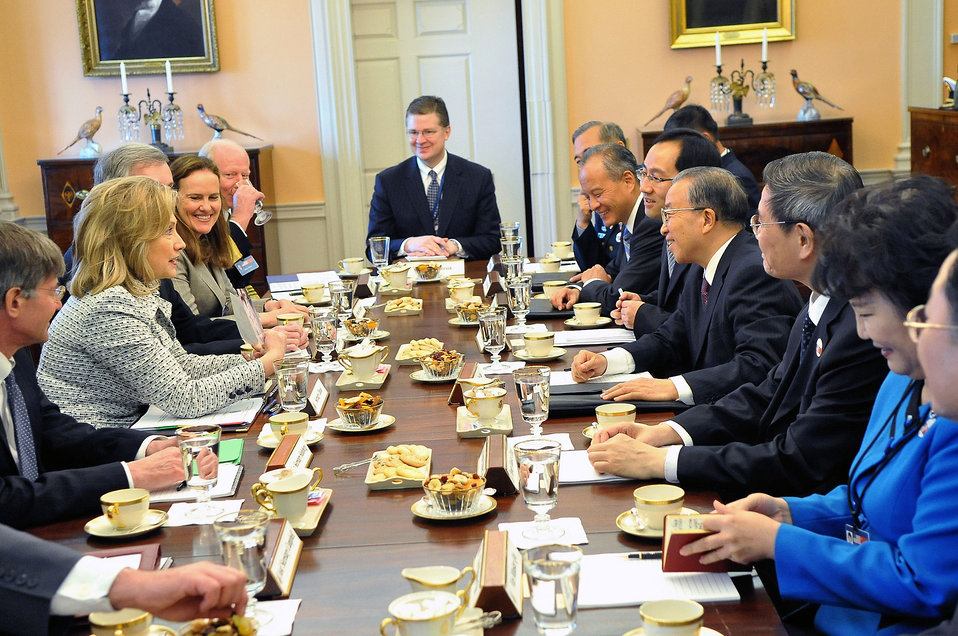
Secretary Clinton Hosts Working Luncheon With Chinese State Councilor Dai Bingguio

U.S. Secretary of State Hillary Rodham Clinton hosts a working luncheon with Chinese State Councilor Dai Bingguo and participants in the U.S.-China Strategic and Economic Dialogue (S&ED) Strategic Track, at the U.S. Department of State in Washington, D.C., on May 9, 2011.